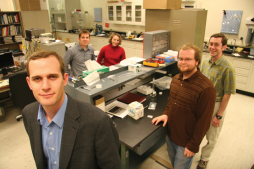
ARPA-E Friesen - ASU